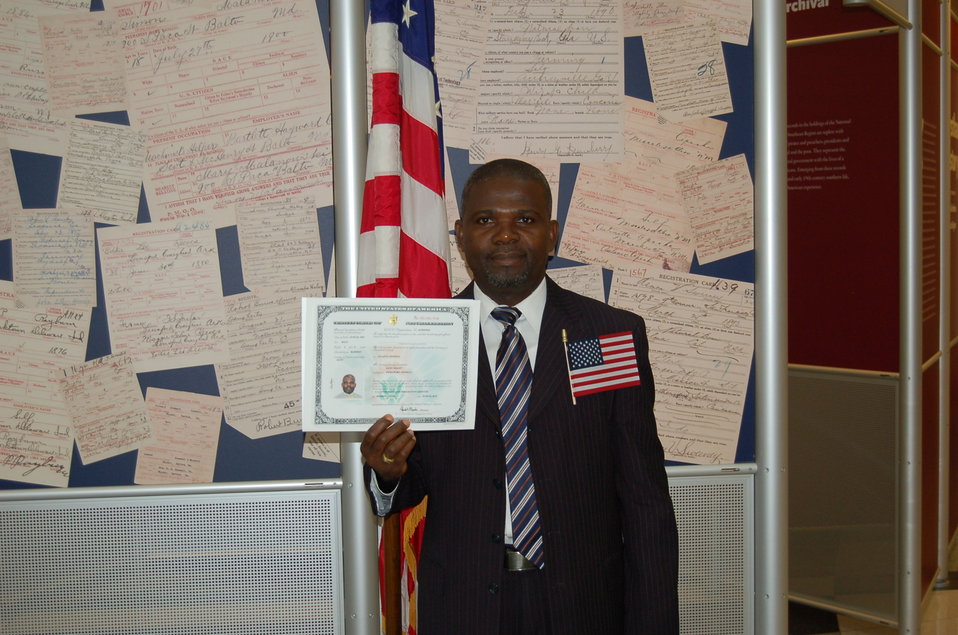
New Citizens